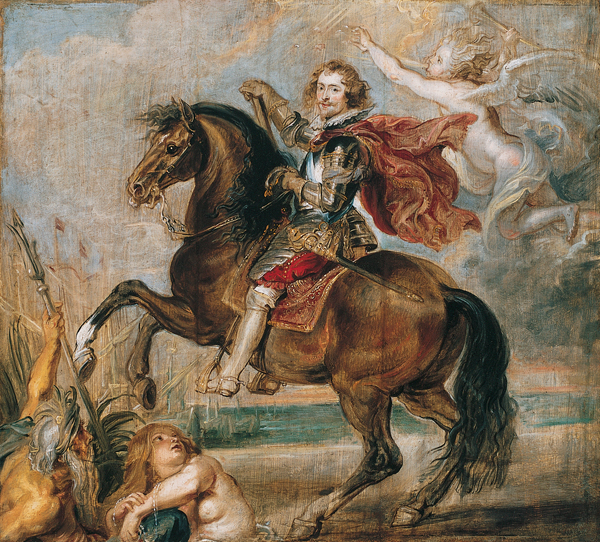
'Equestrian Portrait of the George Villiers, 1st Duke of Buckingham'